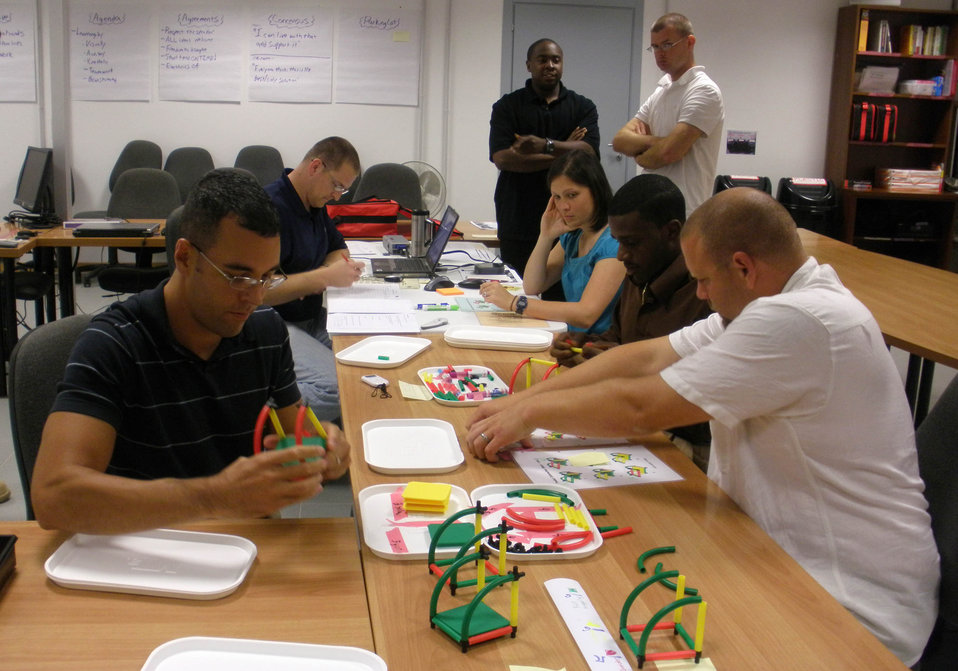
KanDo Lean class

Airmen work together to meet customer demand as part of a KanDo Lean class exercise Sept. 11, 2009, at Aviano Air Base, Italy. The class, which is offered through the Air Force Smart Operations 21 office here, allows attendees to receive training in a team-based environment to discover how to remove waste from a simulated process and relate that to what they do every day through active execution and discussion.